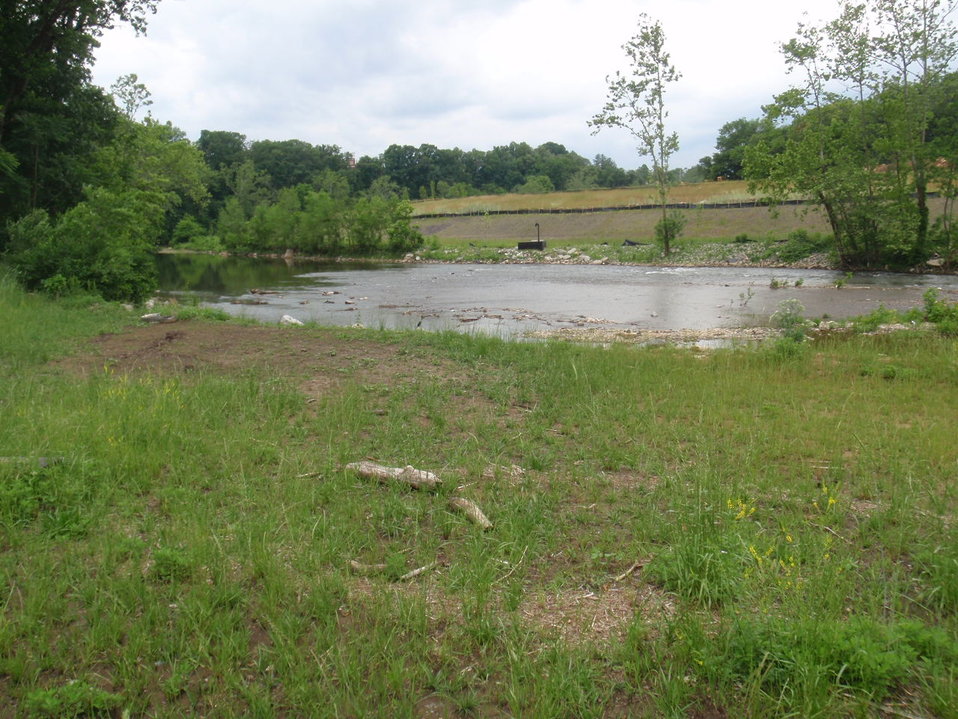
Photo after Removal of Wasena Dam

Roanoke River after removal of Wasena Dam was completed.